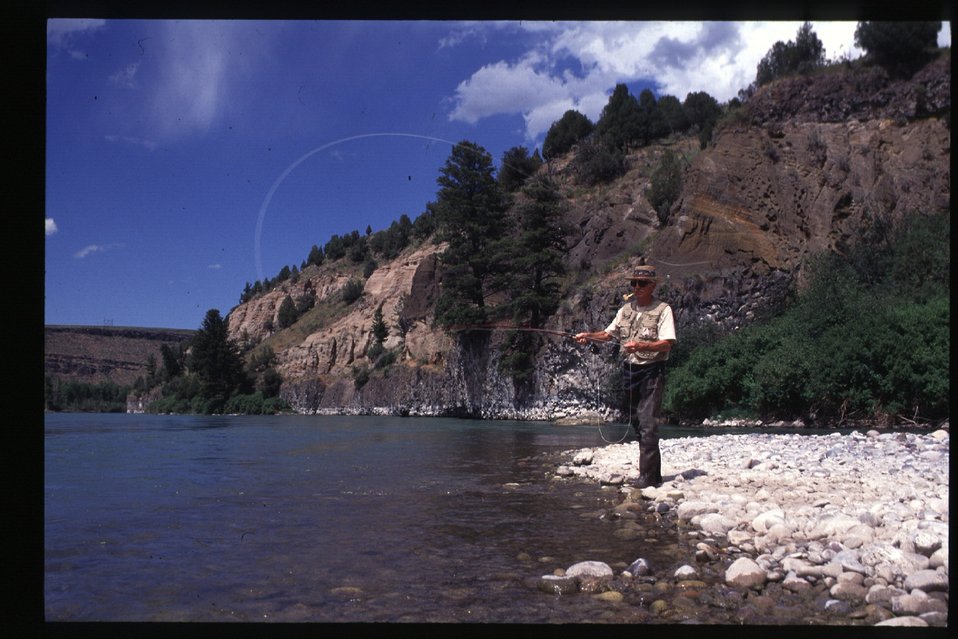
Fly fishing South Fork of Snake River Idaho Falls Field Office USRD Upper Snake River District